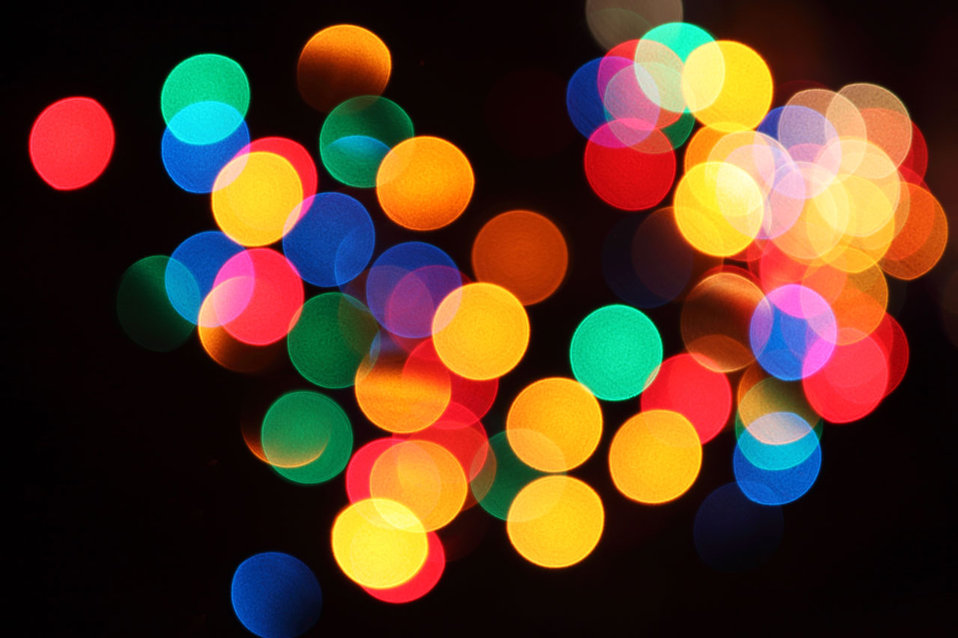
Blurred lights

Blurred colorful lights.